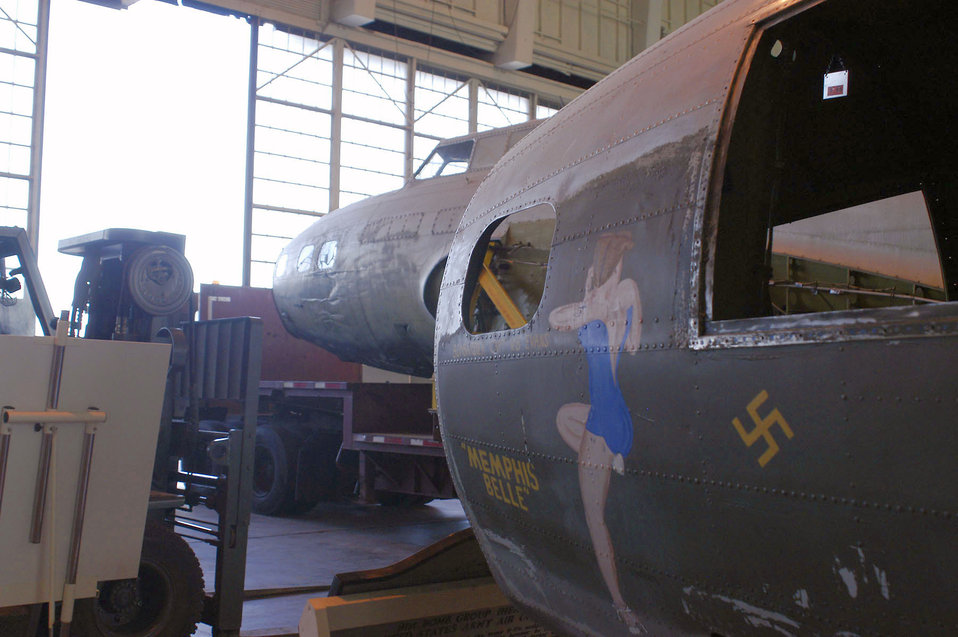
'The Swoose' finds new home at National Museum of the U.S. Air Force

The B-17D The Swoose rests next to the B-17F Memphis Belle in the restoration area of the National Museum of the U.S. Air Force near Dayton, Ohio.